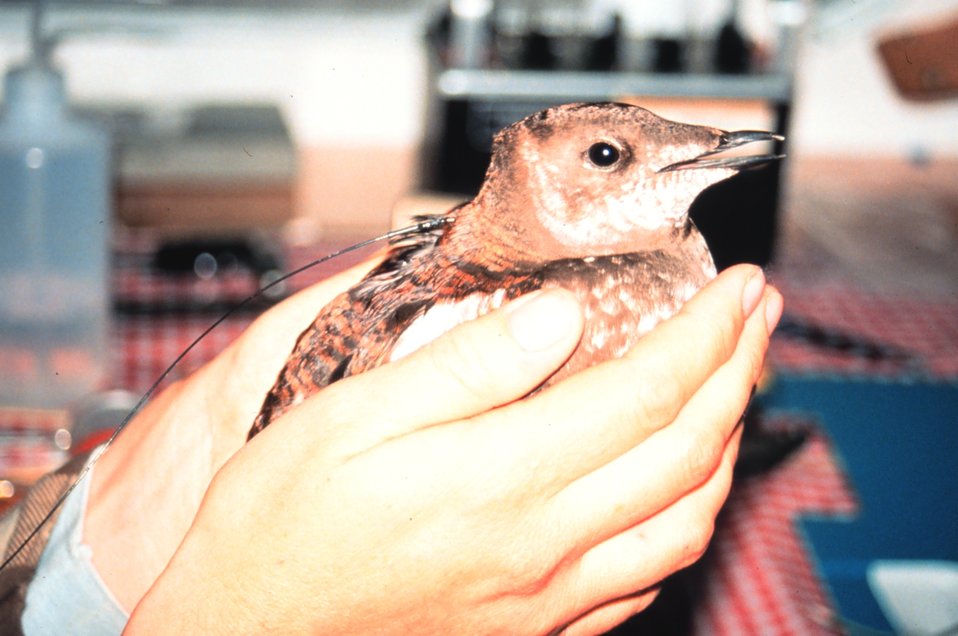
Cleaning an oiled bird